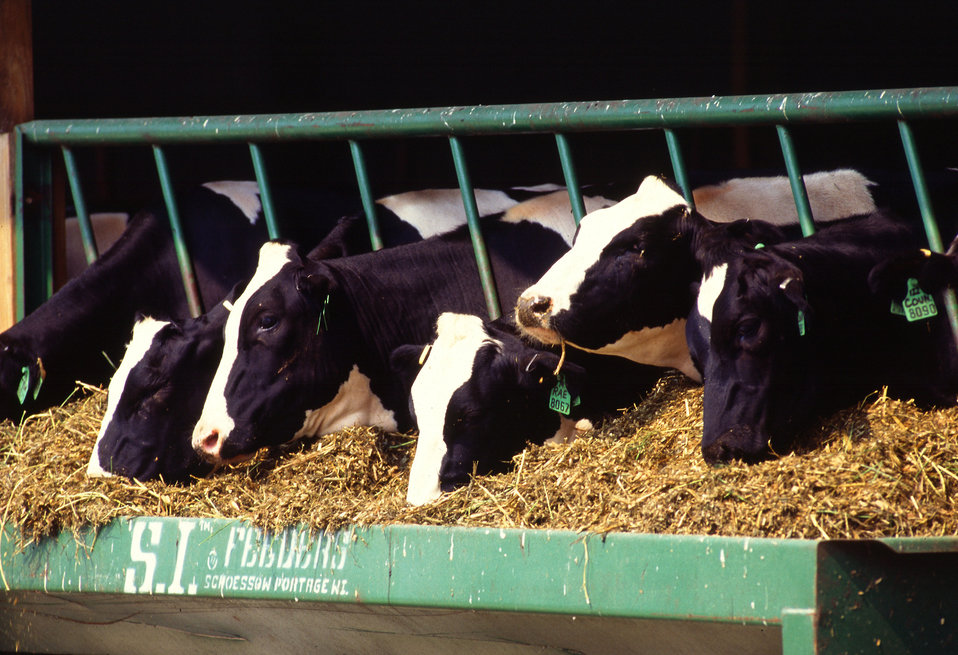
Holstein dairy cows eat a prescribed feed to support good health.